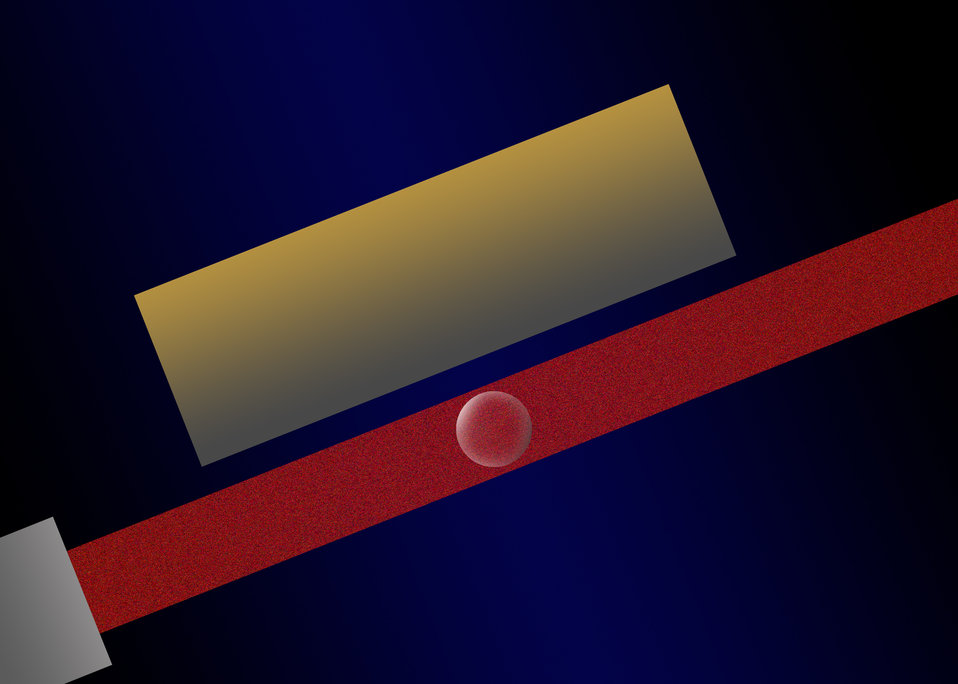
Laser Physics

A beam of laser light (red) should be able to cause a glass bead of approximately 300 nanometers in diameter to levitate, and the floating bead would be exquisitely sensitive to the effects of gravity. Moving a large heavy object (gold) to within a few nanometers of the bead could allow the team to test the effects of gravity at very short distances.